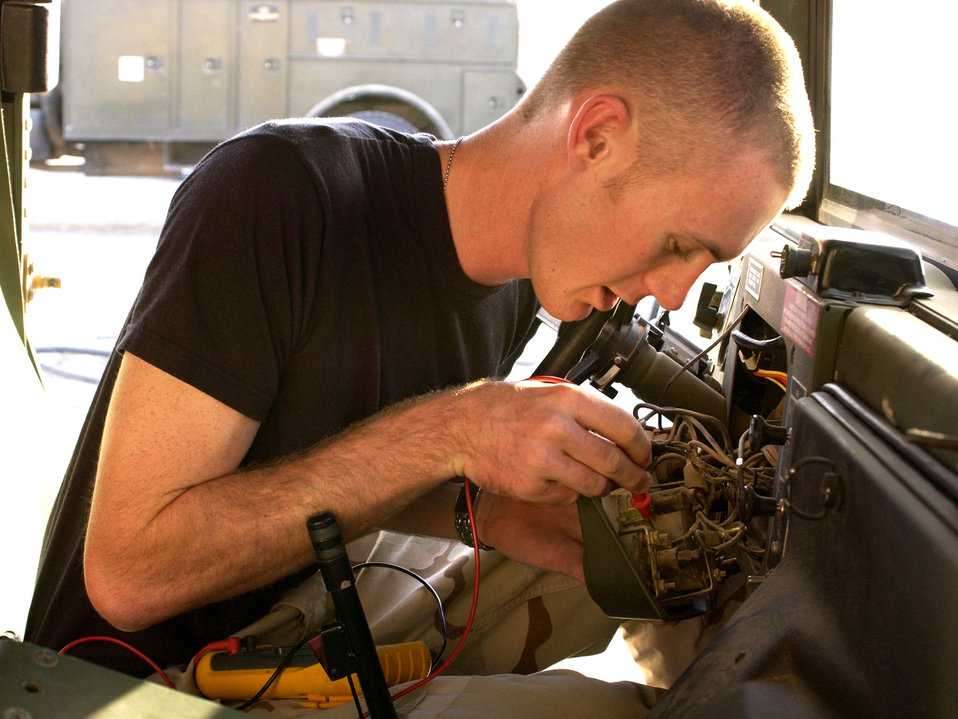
HUMVEE hookup

SOUTHWEST ASIA (AFPN) -- Airman 1st Class Erik Elder installs a vehicle radio system in an armored HUMVEE for the 386th Expeditionary Explosive Ordinance Detachment here. Airman Elder is a ground radio maintenance technician deployed from the 35th Communications Squadron at Misawa Air Base, Japan.